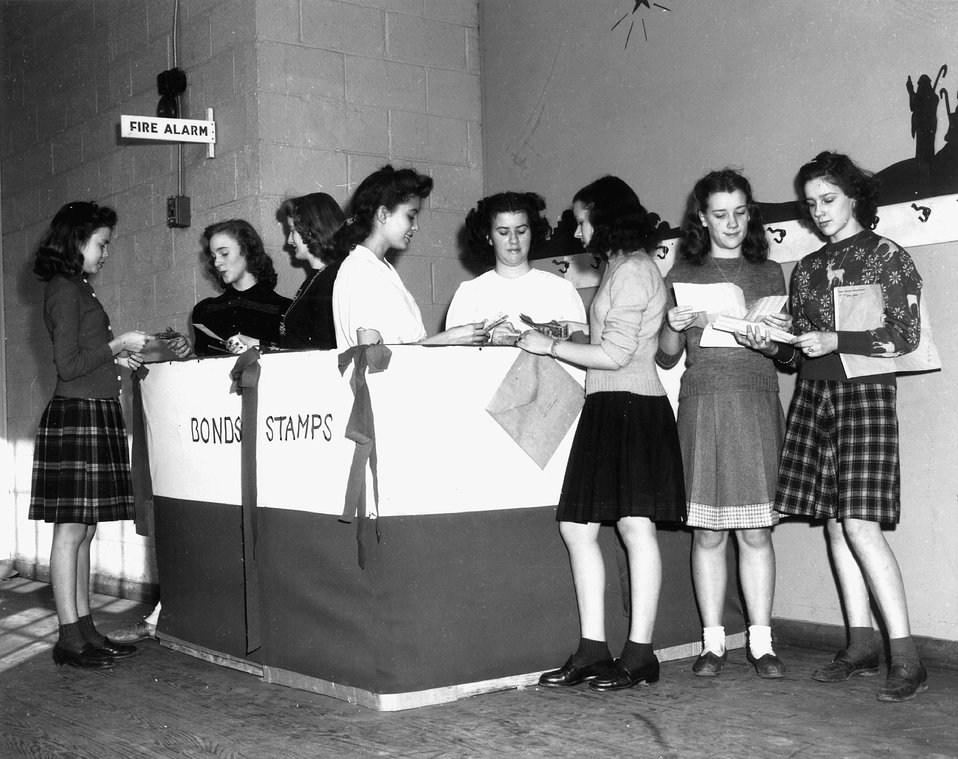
Jefferson Jr. High - War Bonds Booth. c. 1946